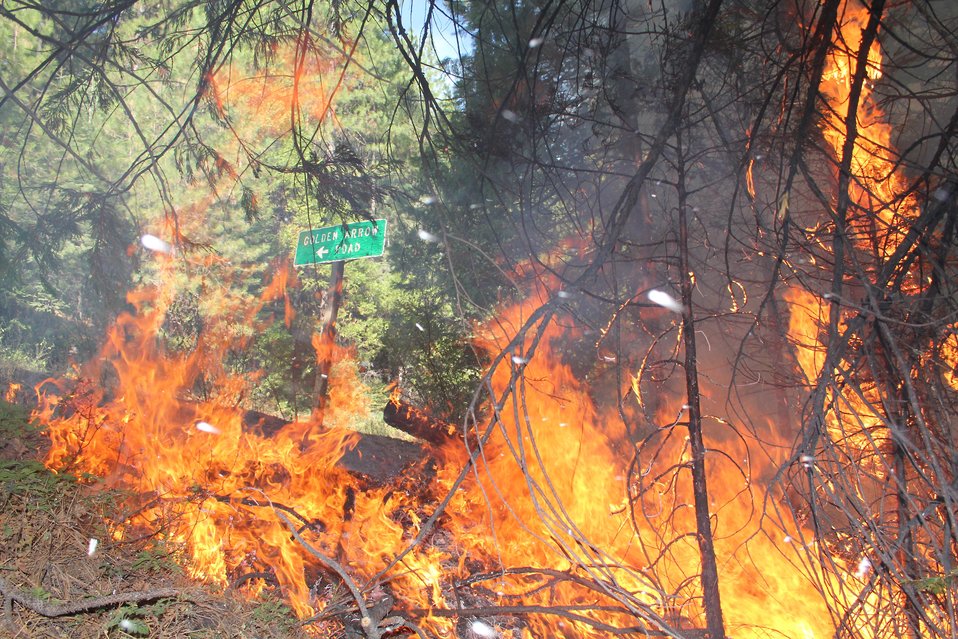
The Rim Fire in the Stanislaus National Forest near in California began on Aug. 17, 2013 and is under investigation. The fire has consumed approximately 192,737 acres and is 30% contained.